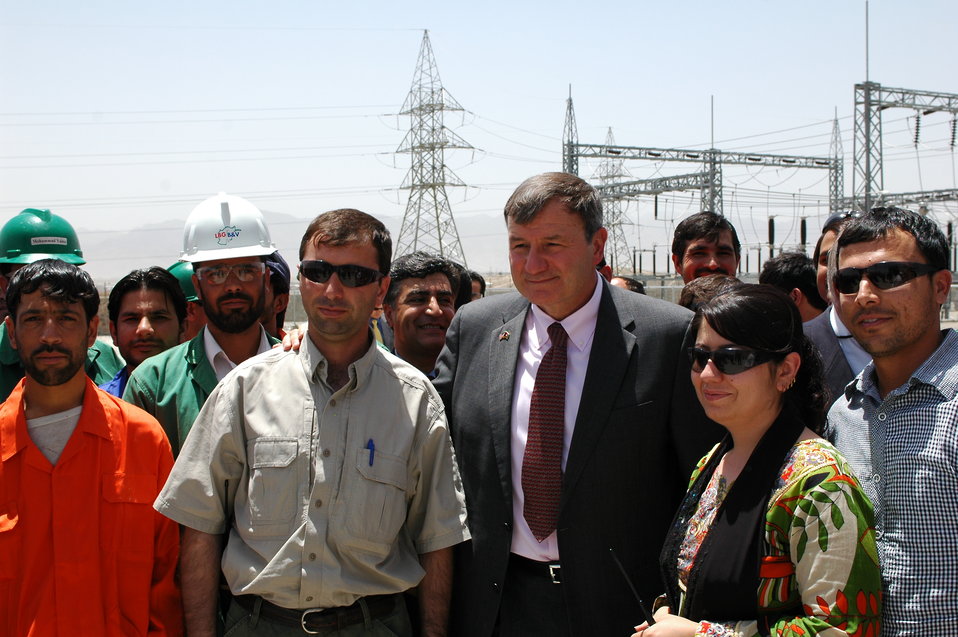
105 MW Tarakhil Power Plant Handover